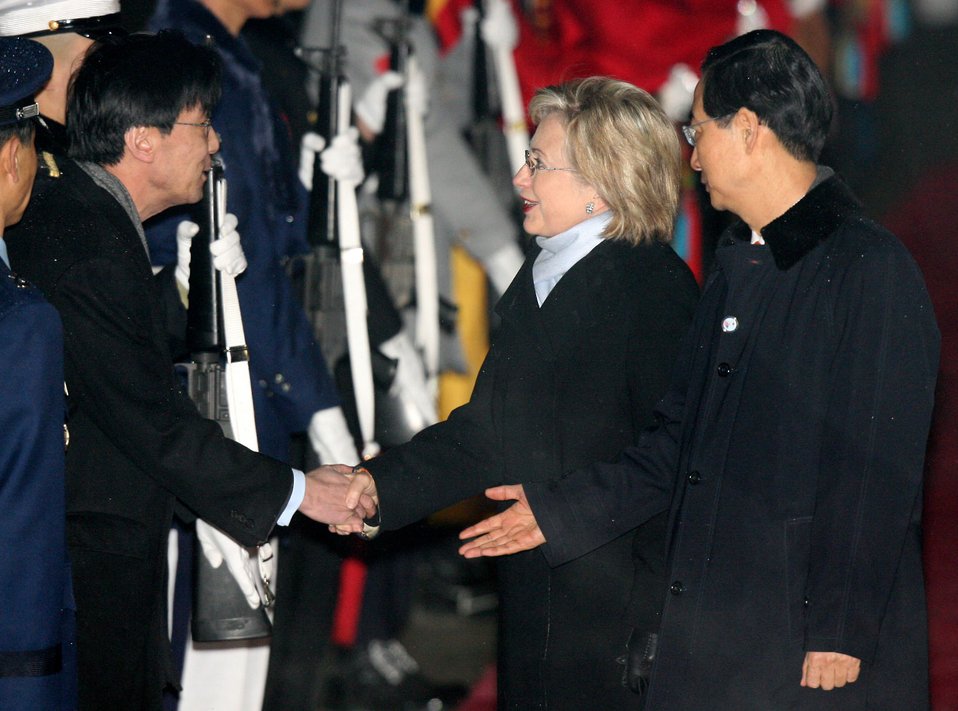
Secretary Clinton Arrives in Seoul, South Korea

U.S. Secretary of State Hillary Rodham Clinton, accompanied by Ambassador-designate to the United States Han Duck-soo, is greeted by Chang Ho-jin, Director General of North American Affairs at the Foreign Ministry in Seoul, South Korea February 19, 2009.